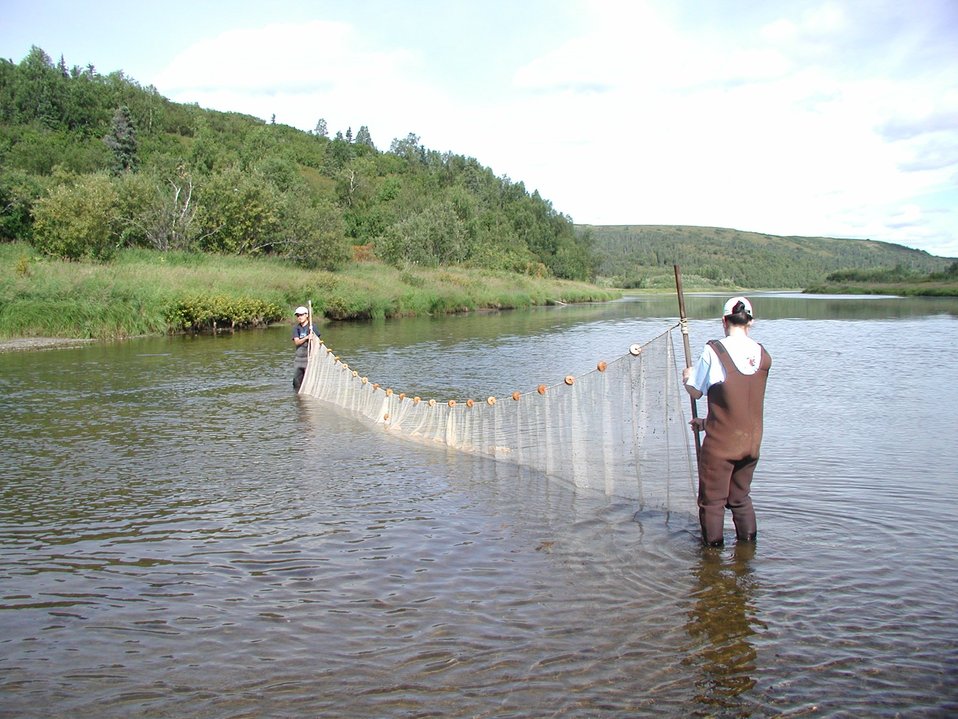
Seining

USFWS Yukon Delta NWR